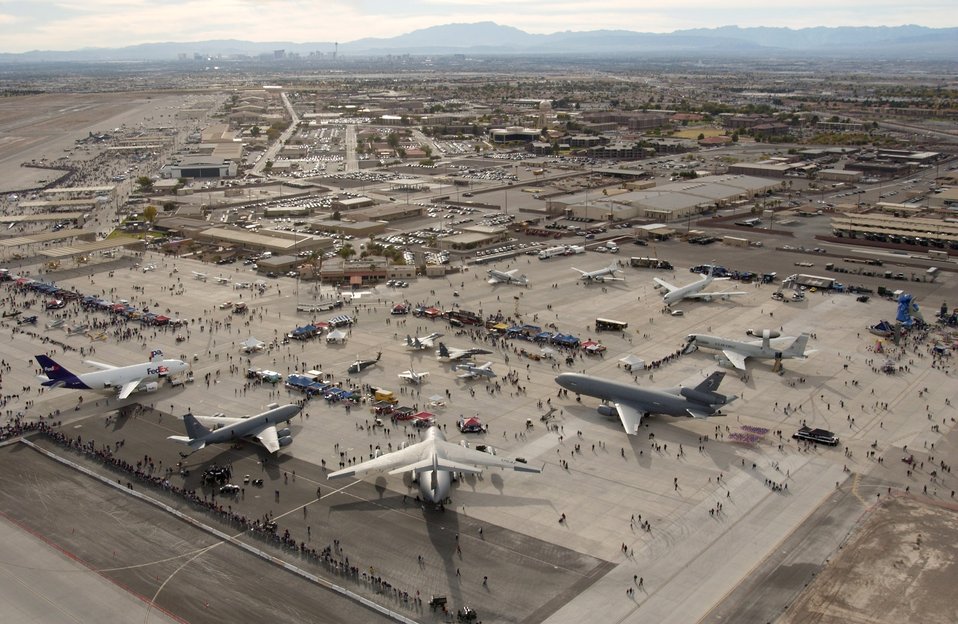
Aviation Nation at Nellis

An aerial view of the flightline shows the city of Las Vegas in the distance during Aviation Nation 2006 Nov. 12 at Nellis Air Force Base, Nev. It is one of the largest aviation events in North America. The show was held Nov. 11 and 12.